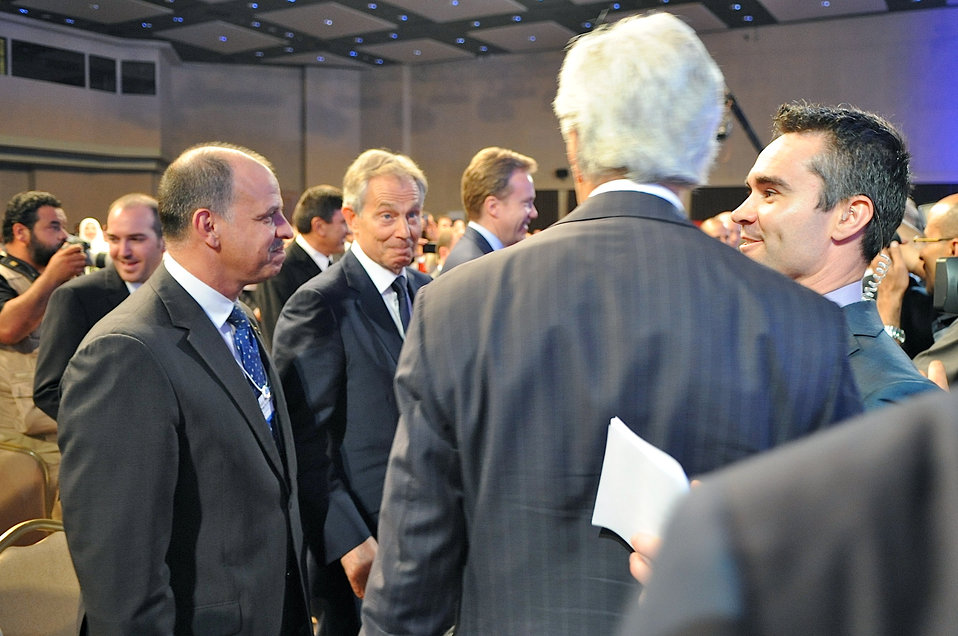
Secretary Kerry Attends World Economic Forum

U.S. Secretary of State John Kerry greets former British Prime Minister Tony Blair as the two attend the World Economic Forum in Dead Sea, Jordan, on May 26, 2013.